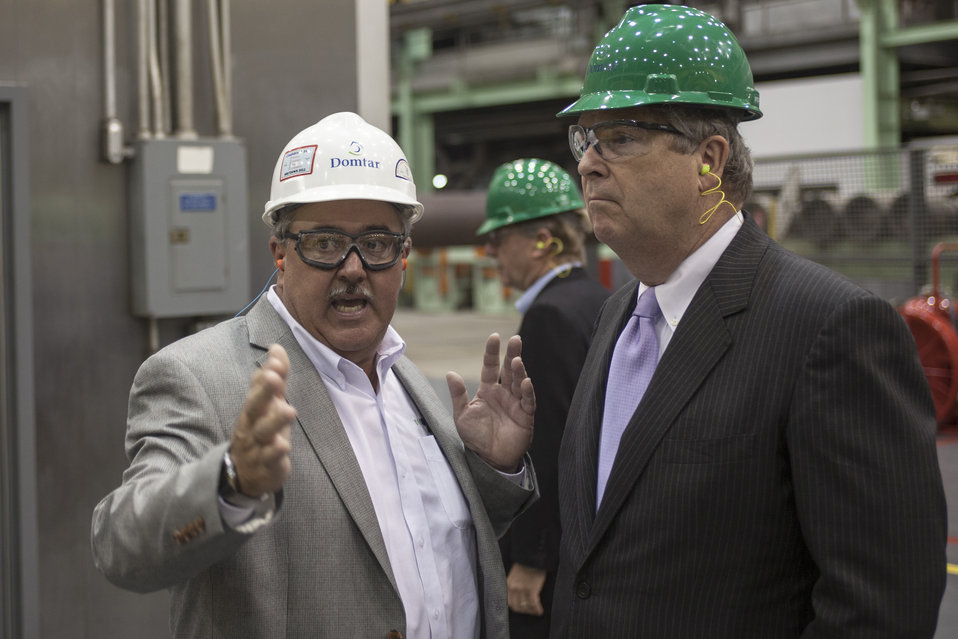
Agriculture Secretary Tom Vilsack (right) tours Domtar Inc. in Plymouth, NC on Friday, Aug. 15, 2013. Domtar produces lignin, a biobased material with the potential to create advanced new products and energy. Domtar is working with a number of partners, including the U.S. Forest Products Laboratory, on development of lignin applications that includes fuel additives, solid fuels, high performance adhesives and more. The U.S. Department of Agriculture (USDA) through a Biomass Research and Development Initiative funding s is the first of its type to open in the U.S. in more than 25 years.